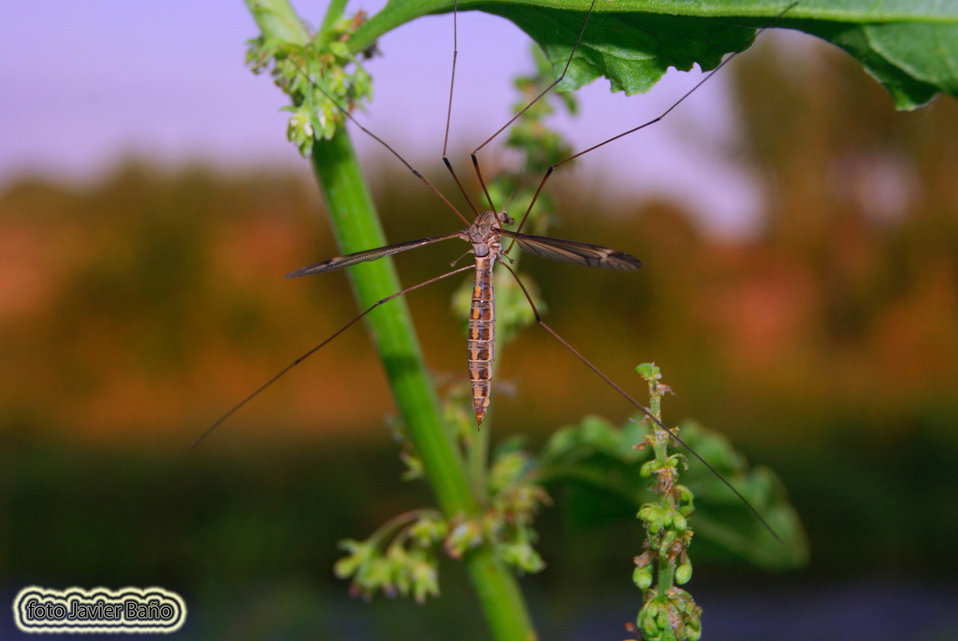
Mosquito insect.